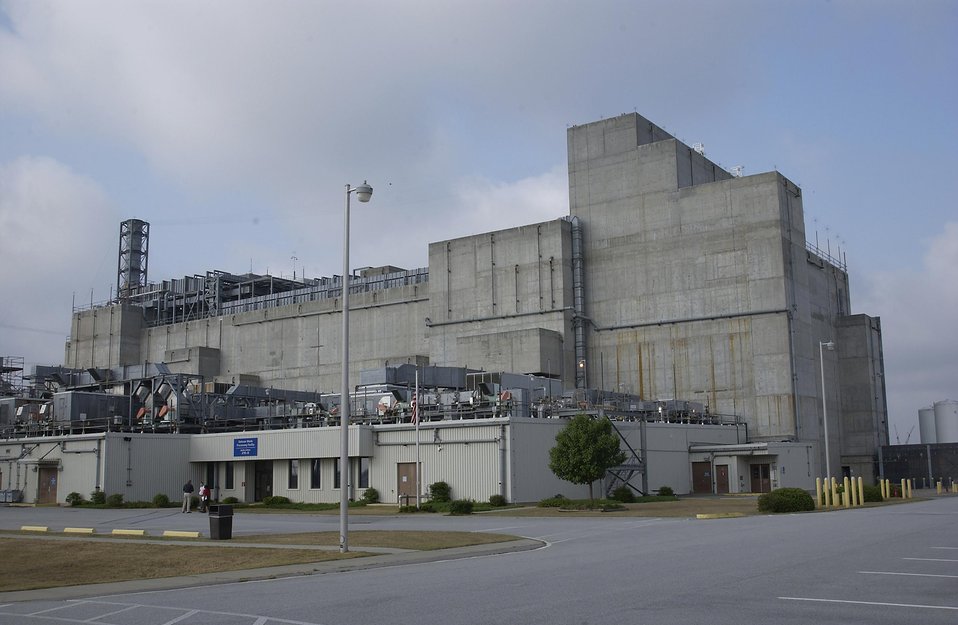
EXTERIOR OF SAVANNAH RIVER SITE'S DEFENSE WASTE PROCESSING FACILITY.

THE DWPF IS DESIGNED TO CONVERT HIGH LEVEL LIQUID DEFENSE NUCLEAR WASTE INTO BOROSILICATE GLASS, A STABLE FORM SUITABLE FOR STORAGE, TRANSPORTATION AND REPOSITORY STORAGE. THE WASTE TO GLASS PROCESS IS KNOWN AS VITRIFICATION. THE RADIOACTIVE WASTE IS FUSED WITH SAND AT A TEMPERATURE OF 2,000 DEGREES IN A LARGE CRANE OPERATED STEEL MIXER, POURED INTO STAINLESS STEEL CANISTERS TO HARDEN INTO A BLACK GLASS. THE SEALED CANISTERS ARE STORED VERTICALLY IN SLOTS ON A CONCRETE SLAB UNTIL THEY CAN BE MOVED TO A SAFE REPOSITORY.